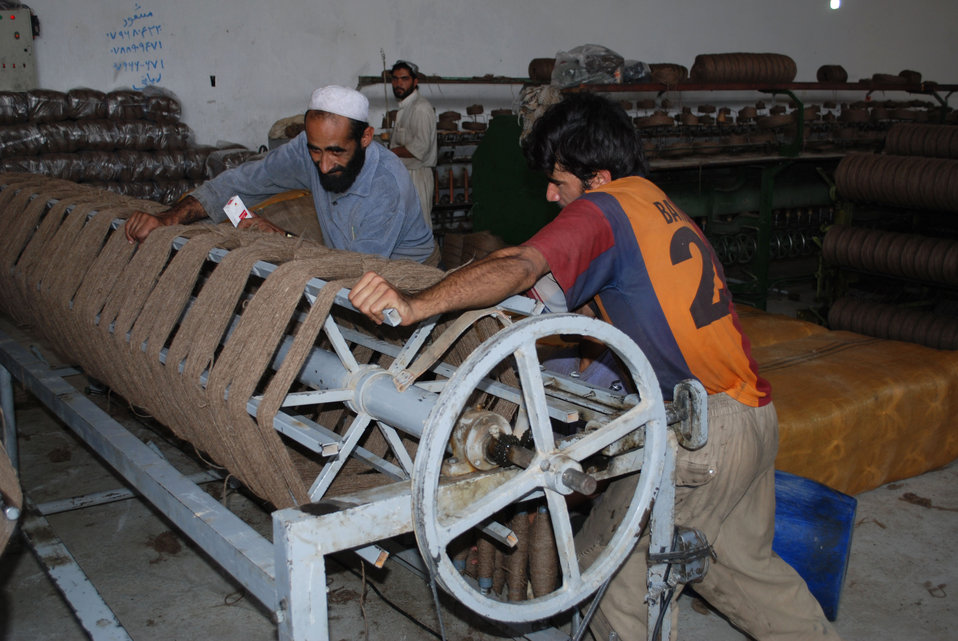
'On the Road' in Balkh Province